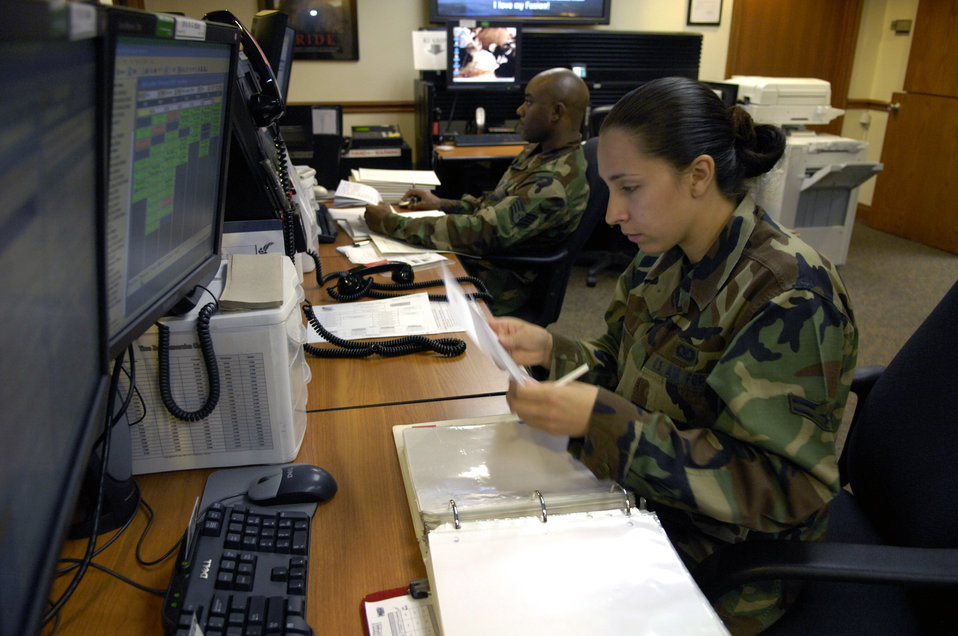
'One command post' initiative beneficial to Airmen

Airman 1st Class Brenda Davis and Staff Sgt. Lynn Brown work at their control consoles inside the command post June 8 at Hickam Air Force Base, Hawaii. The Airmen are emergency actions controllers from the 15th Airlift Wing.